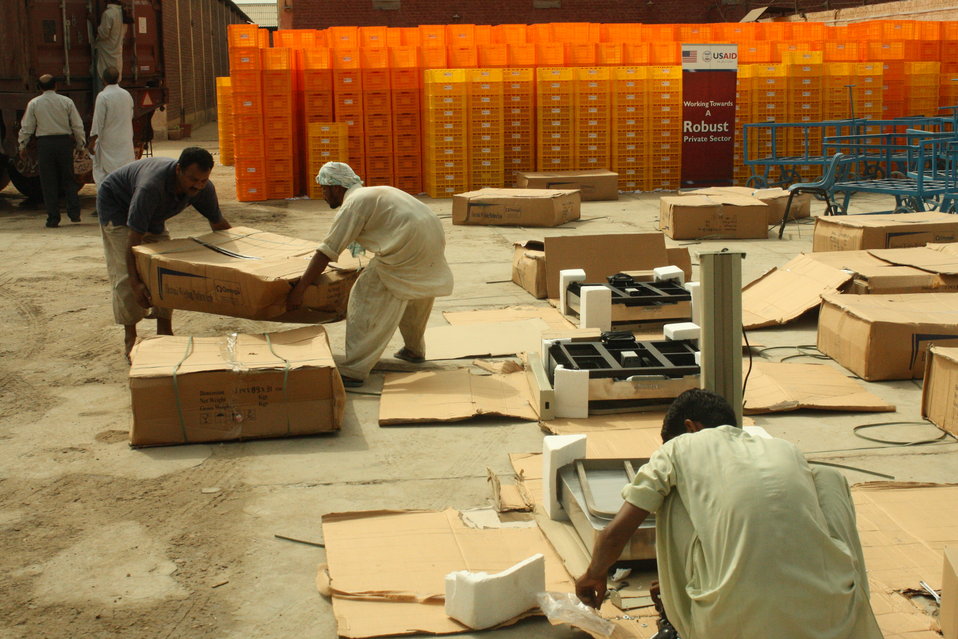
USAID is providing in-kind assistanceto date farming and processing SMEs through a cost-sharing mechanism.